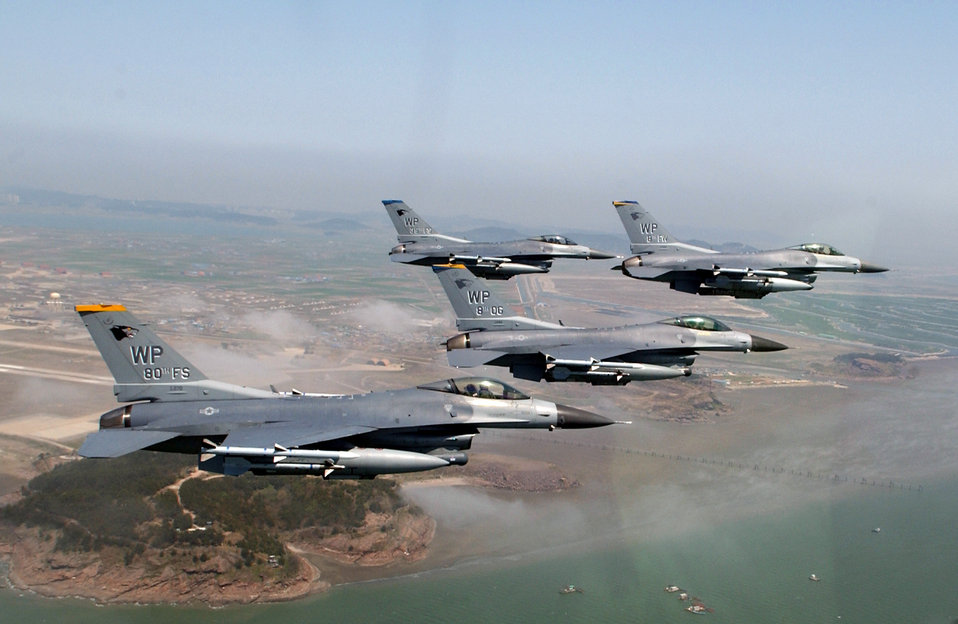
Falcons soar over South Korea

A formation of F-16 Fighting Falcons from the 8th Fighter Wing at Kunsan Air Base, South Korea, flies in close formation near the base on Friday, April 28, 2006. The formation was led by Col. Brian Bishop, 8th FW commander.